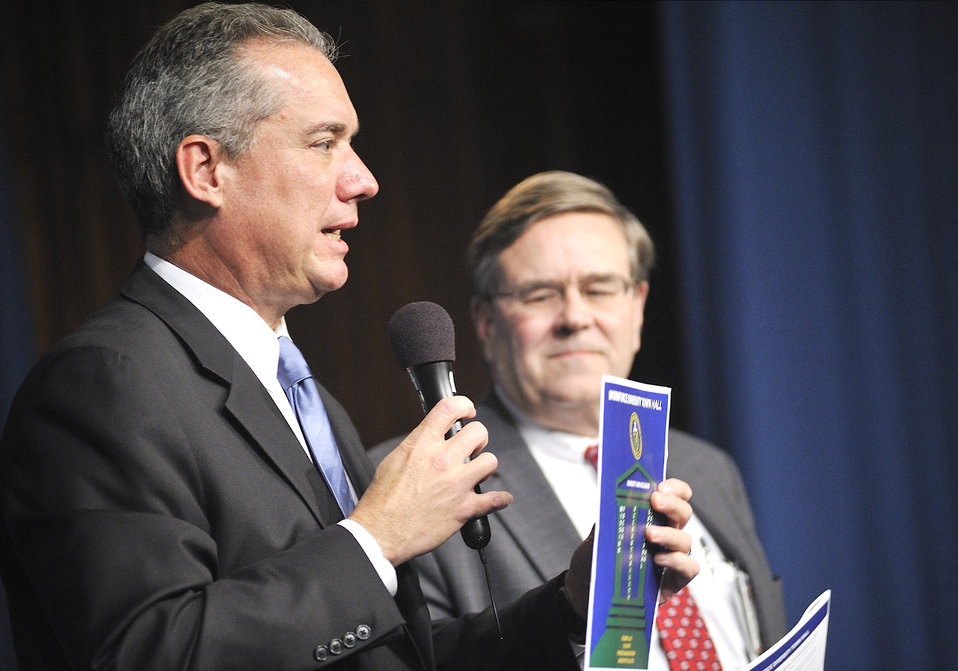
Bill Valdez, Acting Director of the Office of Economic Impact and Diversity, and Mike Kane, Chief Human Capital Officer, present the path forward for diversity and inclusion at the Department.